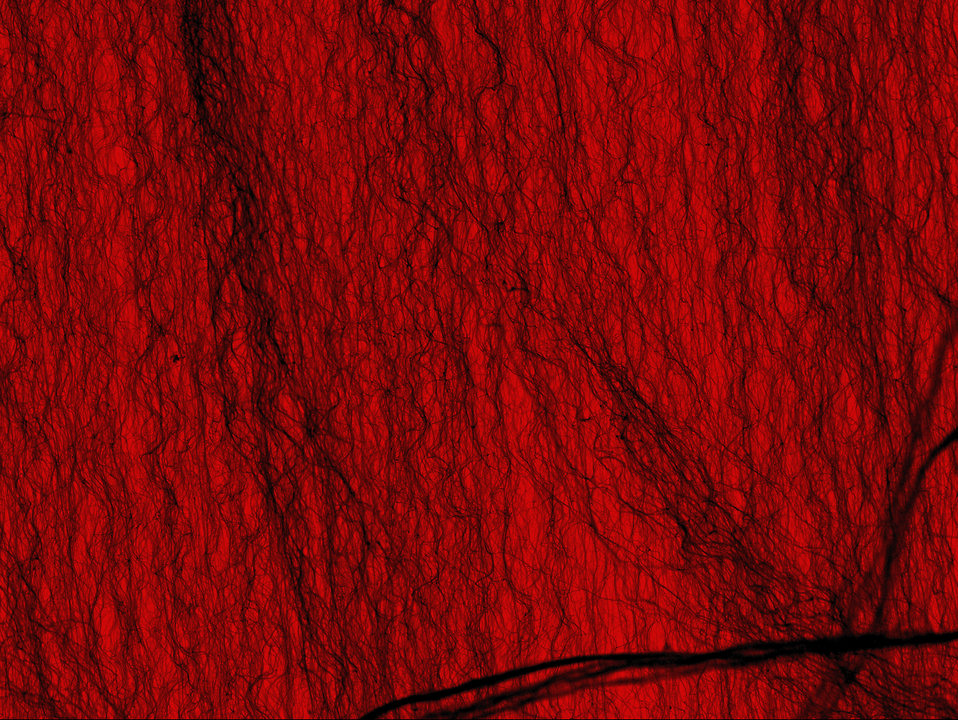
Nanotube; Ultradark

Colorized micrograph of the world's darkest material - a sparse 'forest' of fine carbon nanotubes - coating a NIST laser power detector. Image shows a region approximately 25 micrometers across.